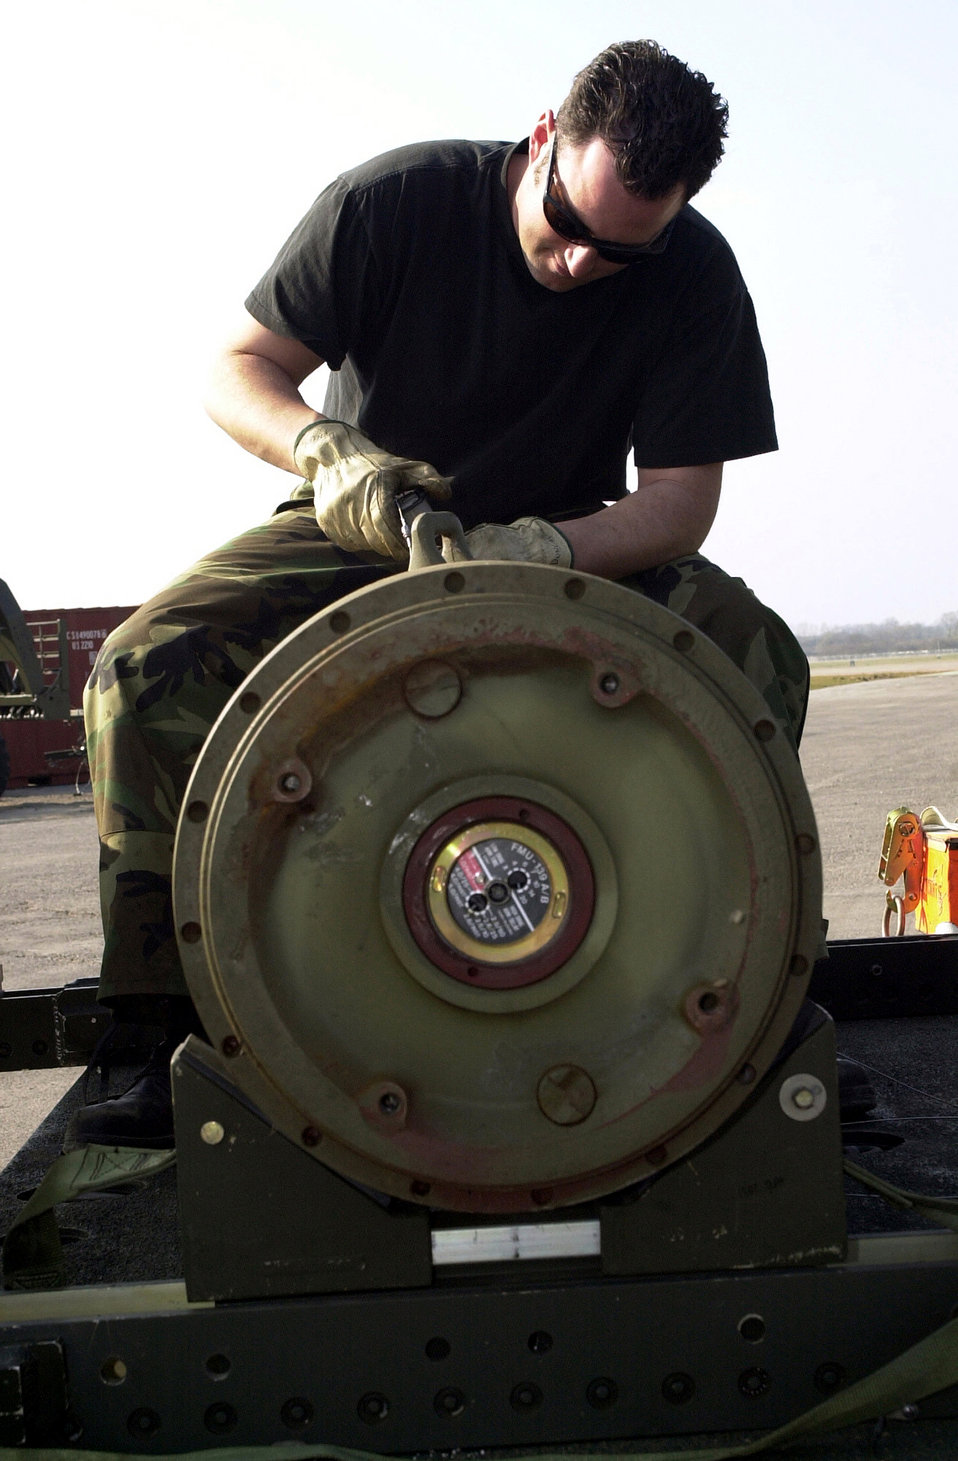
Bomb building 101

OPERATION IRAQI FREEDOM -- Staff Sgt. Matthew Duncan, 9th Munitions Squadron, Beale Air Force Base, Calif., fuses Mk 84 bombs. Munitions troops forward-deployed build bombs before they are loaded onto B-52 Stratofortress bombers. The base is currently home of the 457th Air Expeditionary Group which has been positioned to support Operation Iraqi Freedom.